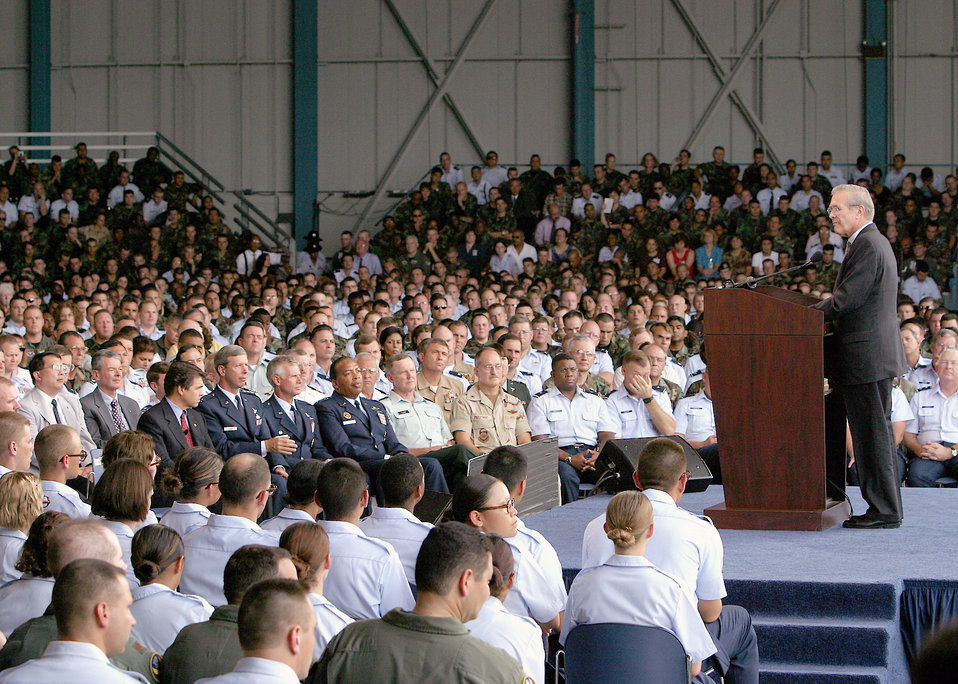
Rumsfeld visit

LACKLAND AIR FORCE BASE, Texas -- Secretary of Defense Donald Rumsfeld addresses the crowd during a town hall meeting here Aug. 25. He spoke to about 3,500 servicemembers from installations in the San Antonio area.